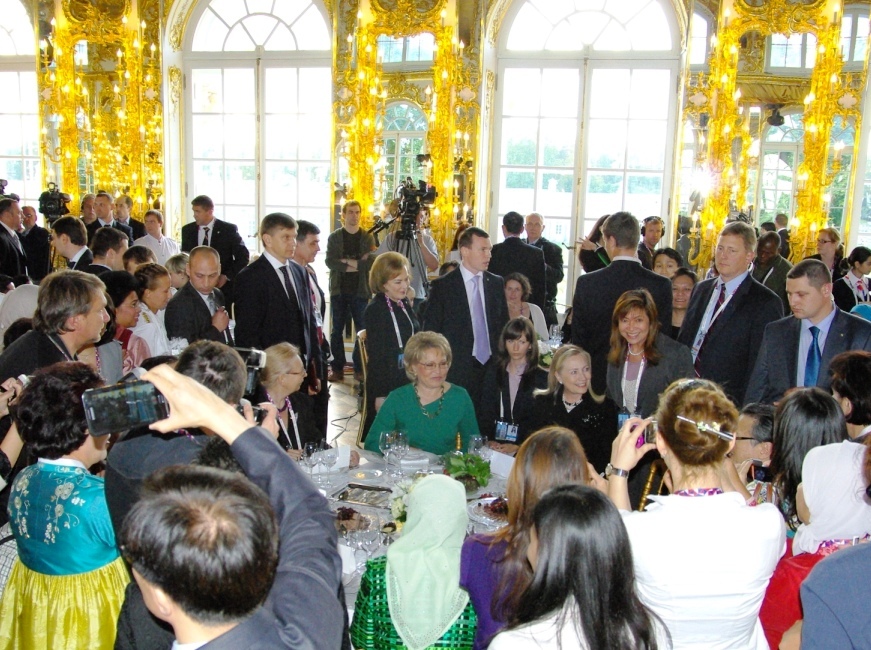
Secretary Clinton at the APEC Reception

U.S. Secretary of State Hillary Rodham Clinton speaks with Chairman of the Federation Council of the Russian Federation Valentina Matviyenko at the APEC – Women and the Economy Forum reception at the Catherine Palace in St. Petersburg, Russia, on June 29, 2012.